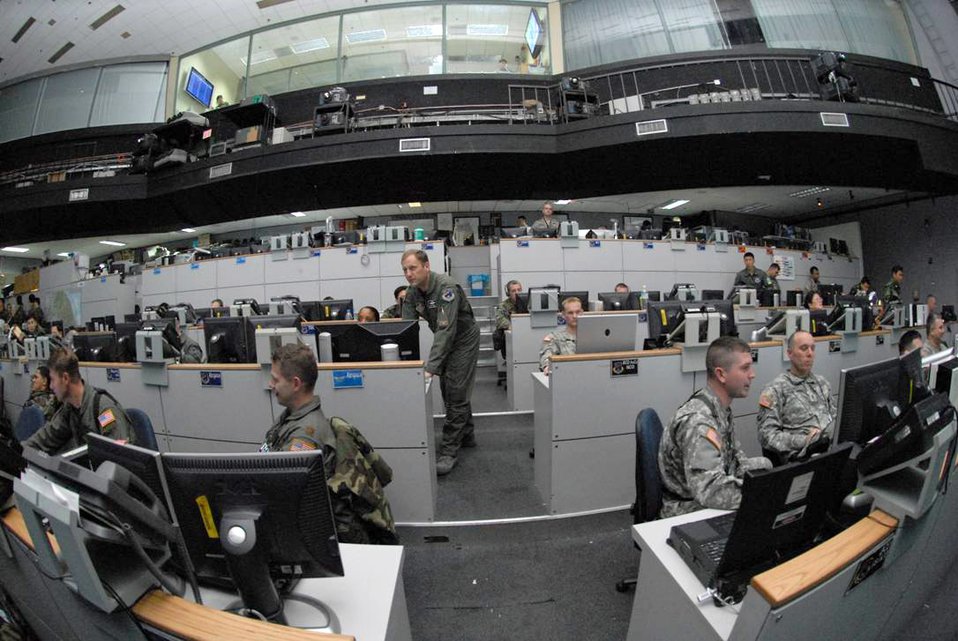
Air Power brings unique capability to Key Resolve/Foal Eagle Exercise

Col. Rob Kyrouac, (center), leads members on the